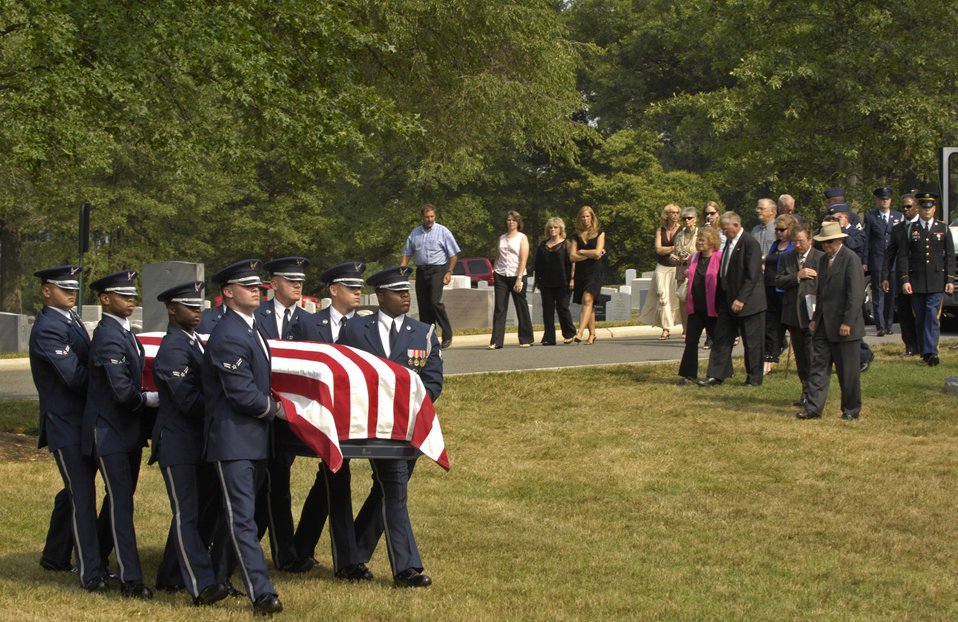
Chief Pfingston laid to rest at Arlington

Air Force Honor Guard pallbearers carry the coffin of former Chief Master Sergeant of the Air Force Gary R. Pfingston to his burial site at Arlington National Cemetery, Va., July 6. The 10th CMSAF was born in Evansville, Ind., and entered the Air Force in February 1962. He passed away June 23 in San Antonio.